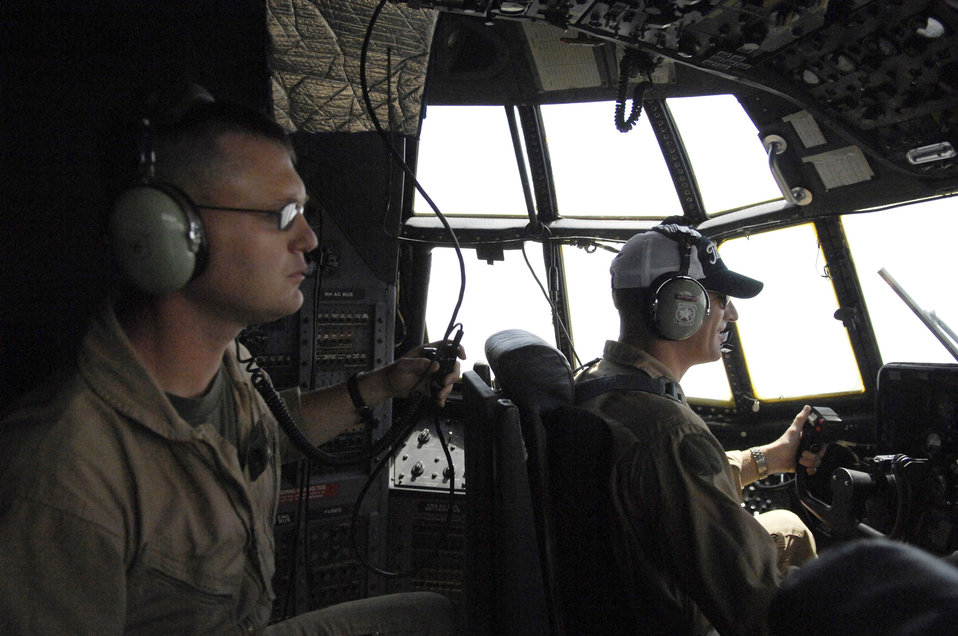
Jump training at Lackland AFB

Capt. Daniel Wrynn and Staff Sgt. Ben Aaron conduct a training mission in a Marine C-130 Hercules over Lackland Air Force Base, Texas, July 23. Captain Wrynn is a pilot and Sergeant Aaron is a flight engineer assigned to the Marine Aerial Refueler Transport Squadron 234 at Joint Reserve Base/Naval Station Fort Worth, Texas.